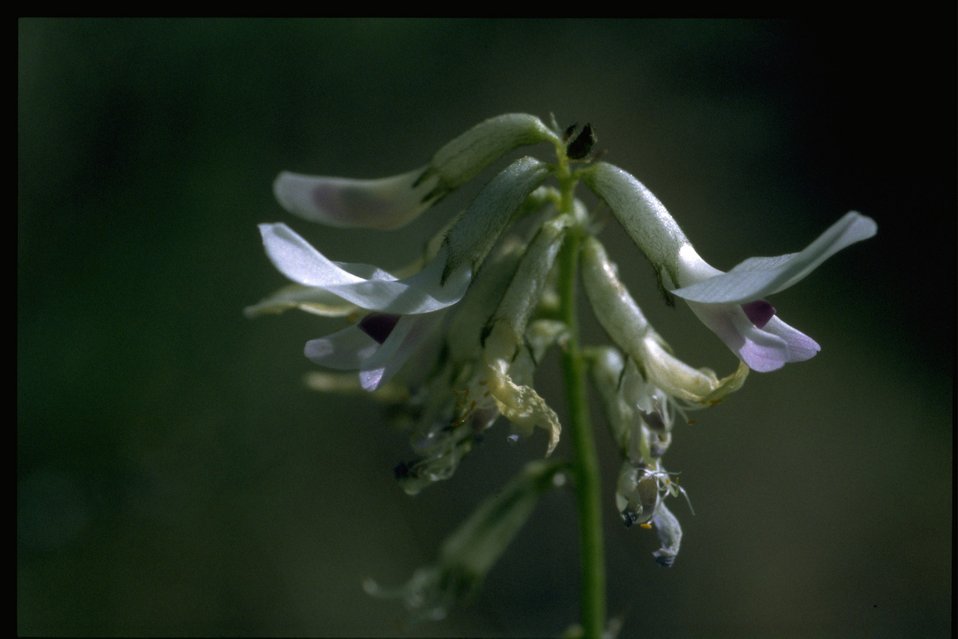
Closeup shot of Idaho milkvetch (Astragalus conjunctus).